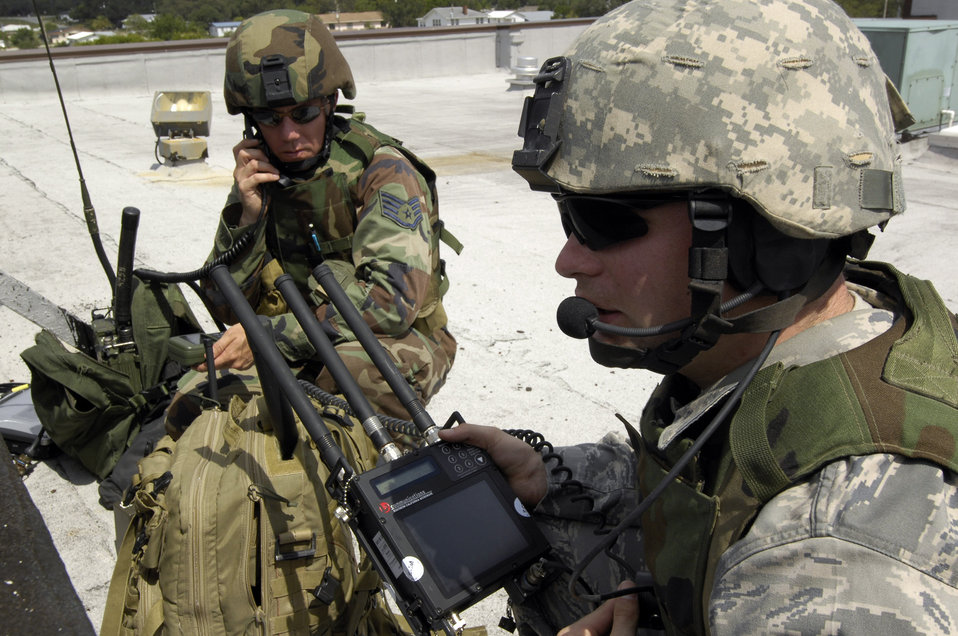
Atlantic Strike VII

Joint terminal attack controllers review map data using the MVRIII, or Mini Rover, while participating in Atlantic Strike VII June 16 in Avon Park, Fla. The MVRIII is a global positioning system integrated micro computer utilized for targeting purposes. Atlantic Strike is a joint-forces training event involving JTACs from the Army, Air Force and Marines and is held semi-annually at Avon Park Air Ground Training Complex.